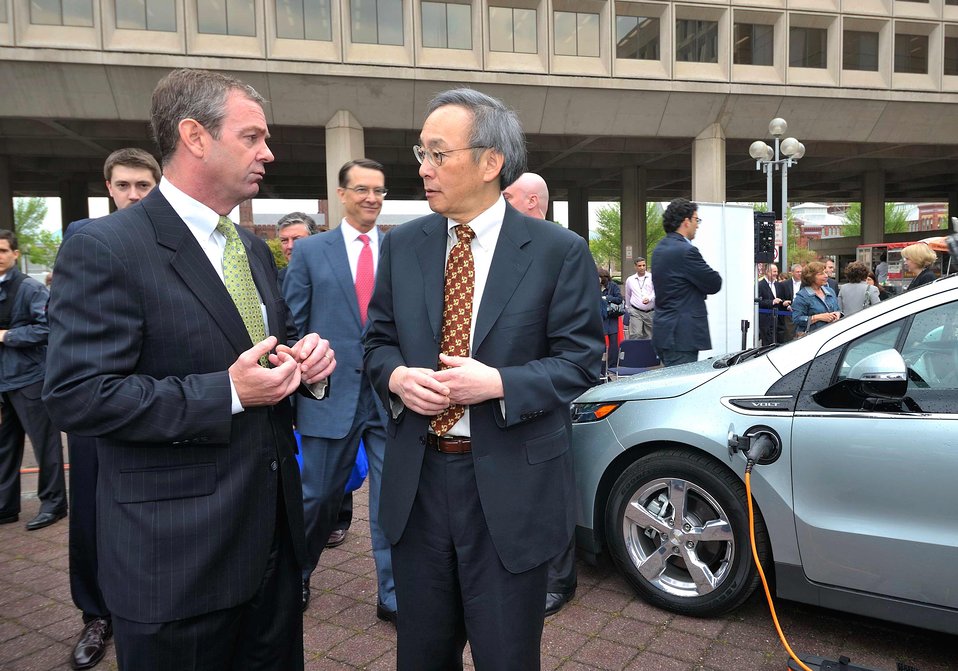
Electric Vehicles on Parade 3 of 5

Steven Chu, US Secretary of Energy, discusses electric vehicles with Brian Wynne, President of the Electric Drive Transportation Association President. Chevy Volt in background.